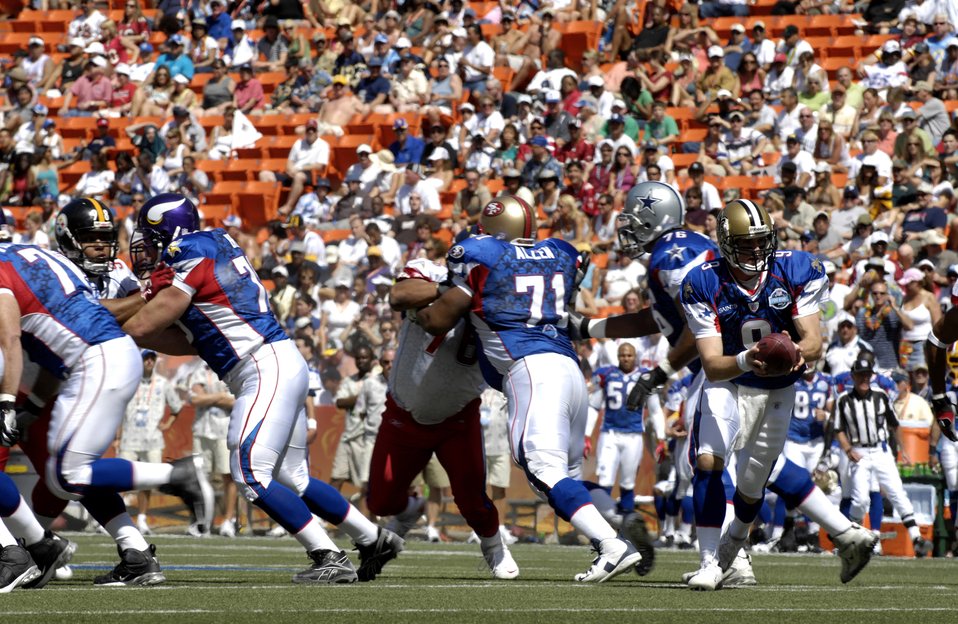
Pro Bowl Airmen

The Pro Bowl is the National Football League's all-star showcase pitting top stars from the American Football Conference and the National Football Conference. Held the week after the Super Bowl, the nationally televised exhibition game has been played in Honolulu since 1980. Servicemembers from all branches of the U.S. military in Hawaii participated in Pro Bowl activities.